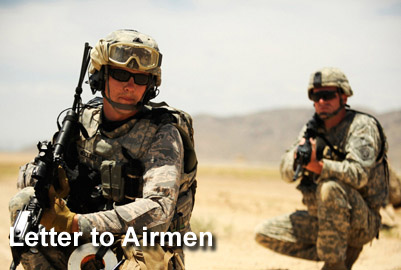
'Letter' highlights joint teamwork

In his latest Letter to Airmen, Secretary of the Air Force Michael B. Donley focuses on working together within the Services.